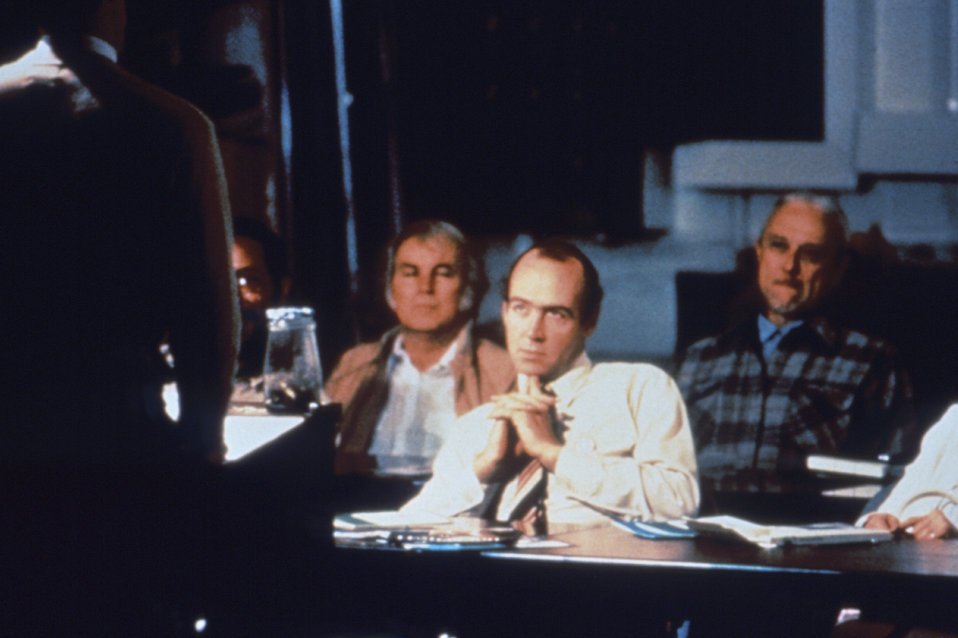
This photograph shows participants in the development of the community health guide known as PATCH.